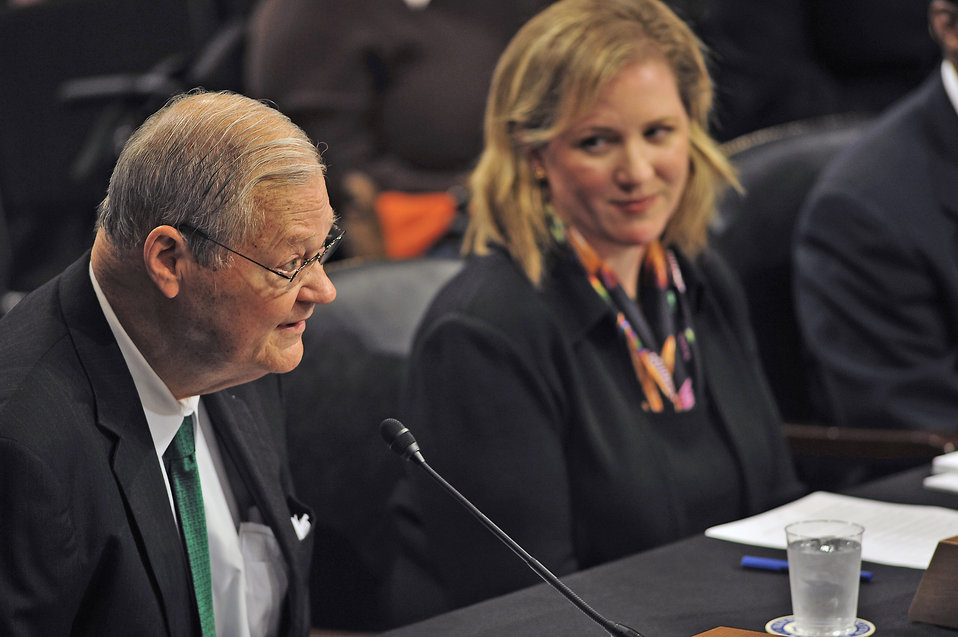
Air Force undersecretary nominee testifies

Erin Conaton, nominee for undersecretary of the Air Force, listens while Rep. Ike Skelton, D-Mo., introduces her to members of the Senate Committee on Armed Services during a hearing Nov. 19, 2009, on Capitol Hill. Ms. Conaton has been the staff director of the House Armed Services Committee since 2001, serving as the primary adviser to Rep. Skelton.